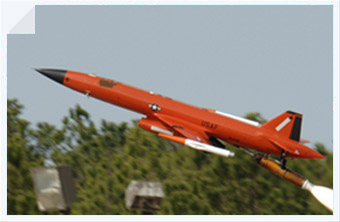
BQM-167 fact sheet

A BQM-167 launches from Tyndall Air Force Base, Fla.